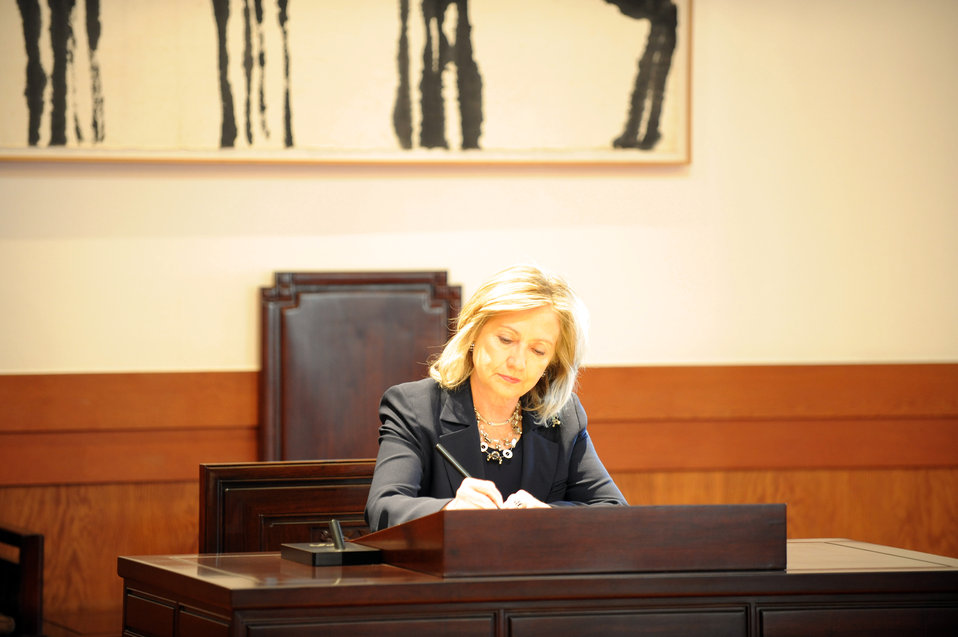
Secretary Clinton Signs the Guest Book

U.S. Secretary of State Hillary Rodham Clinton signs the guest book at the Republic of Korea Presidential Blue House in Seoul, South Korea, on April 17, 2011.